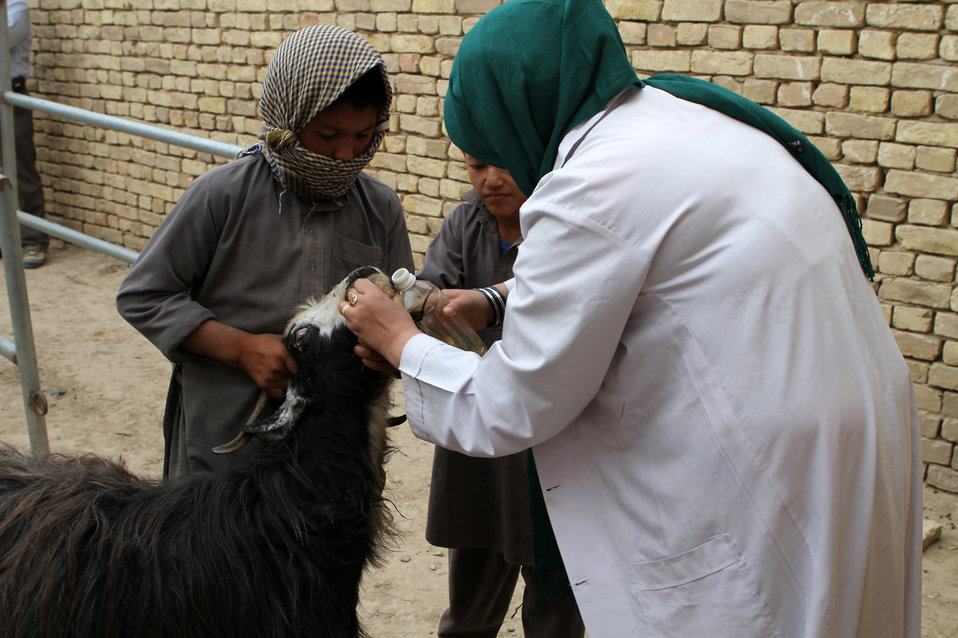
USAID funded Development of Veterinary Field Units